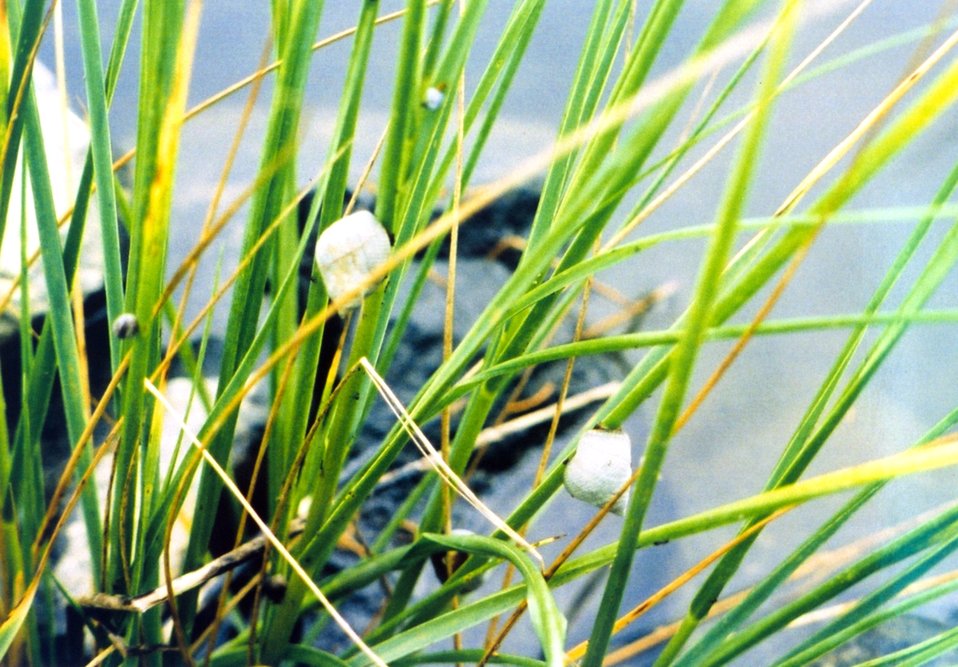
Marsh snails, Littorina littorina.